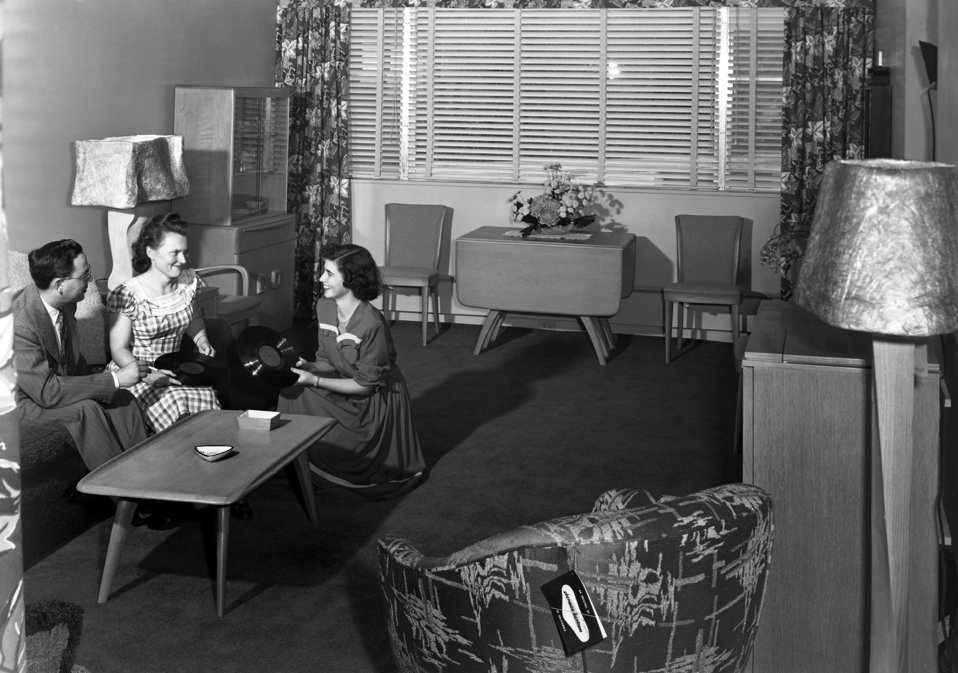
Garden Apartments Oak Ridge 1949

49-5706 DOE photo Ed Westcott 9-15-1949 Joe Thompson, Margarie Taylor and Katie Winfree Oak Ridge Tennessee